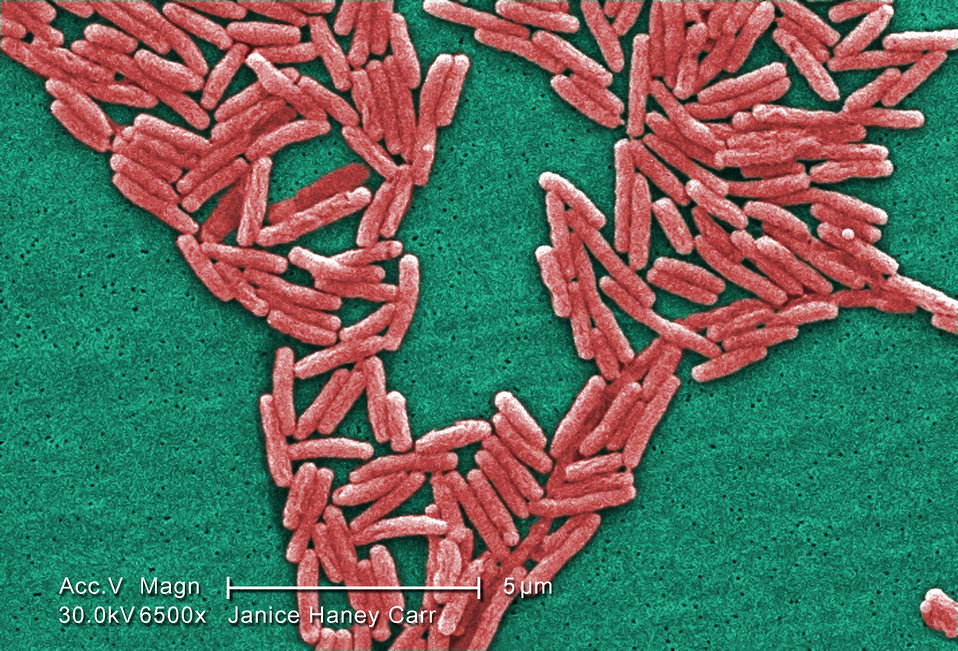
Under a moderately-high magnification of 6500X, this colorized scanning electron micrograph (SEM) depicted a large number of Gram-negative Legionella pneumophila bacteria. Please see PHIL 11092 through 11152 for additional SEMs of these organisms, specifically PHIL 11111 for a black and white version of this image.